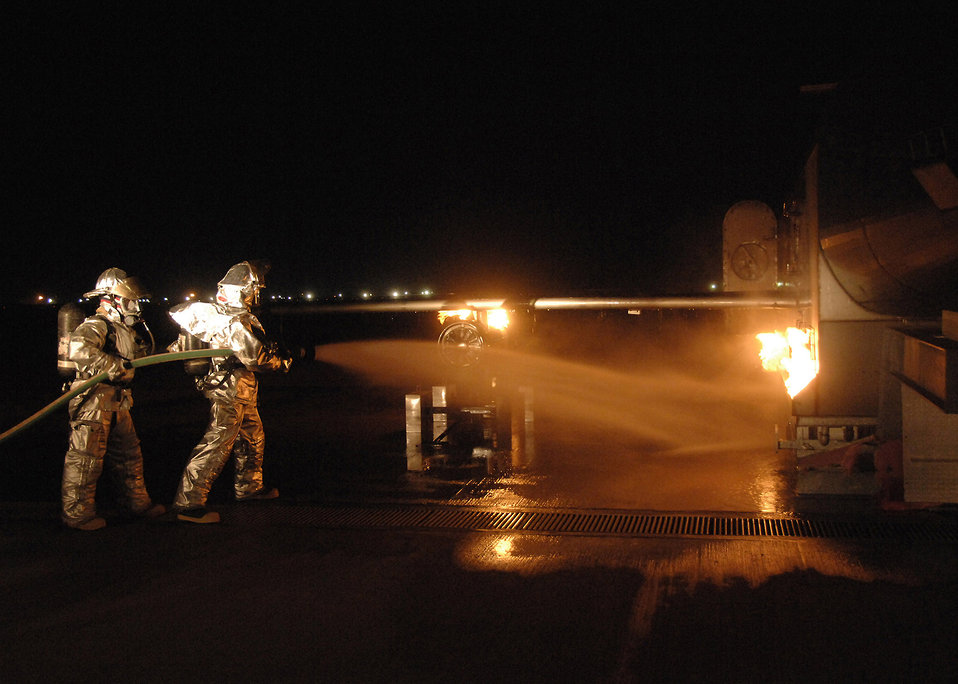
Burning desire

Firefighters from the 386th Expeditionary Civil Engineer Squadron extinguish a fire on an aircraft fire trainer Nov. 24 at an air base in Southwest Asia. The firefighters must complete one daytime and nighttime live fire burn annually.